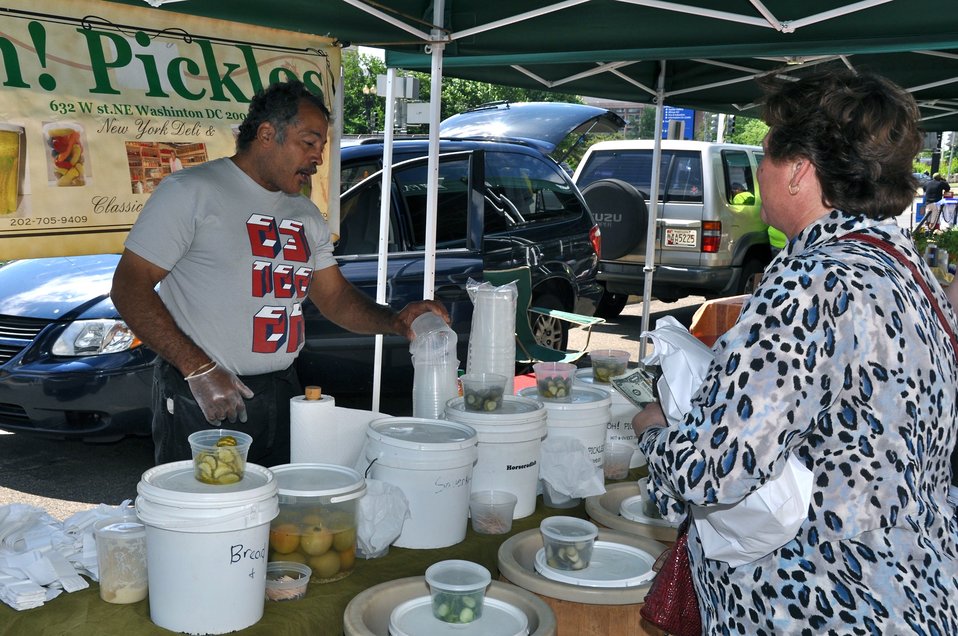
Pickle Vendor at the USDA Farmers Market

A vendor talks to customers at the USDA Farmers Market.